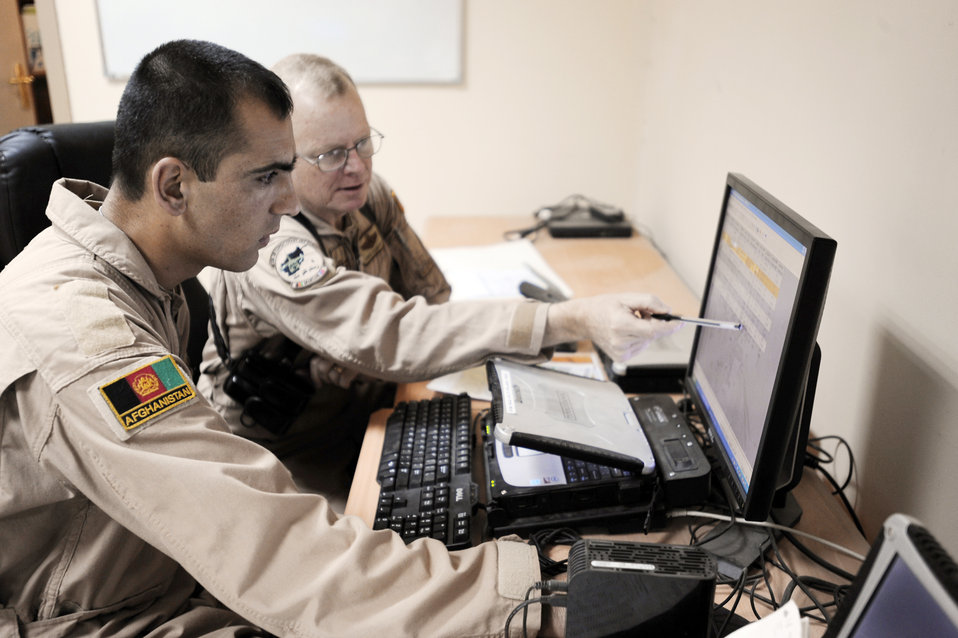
Airmen help Afghans fly C-27 mission

Afghanistan National Army Air Corps 1st Lt. Faiz M. Ramaki (left) and Lt. Col. Chris Kampsen review the flight plan for an ANAAC C-27 Spartan mission March 24, 2010, at Kabul International Airport, Afghanistan. Colonel Kampsen is the the director of operations for the 538th Air Expeditionary Advisory Squadron and a C-27 instructor pilot. Lieutenant Ramaki is an ANAAC C-27 pilot.